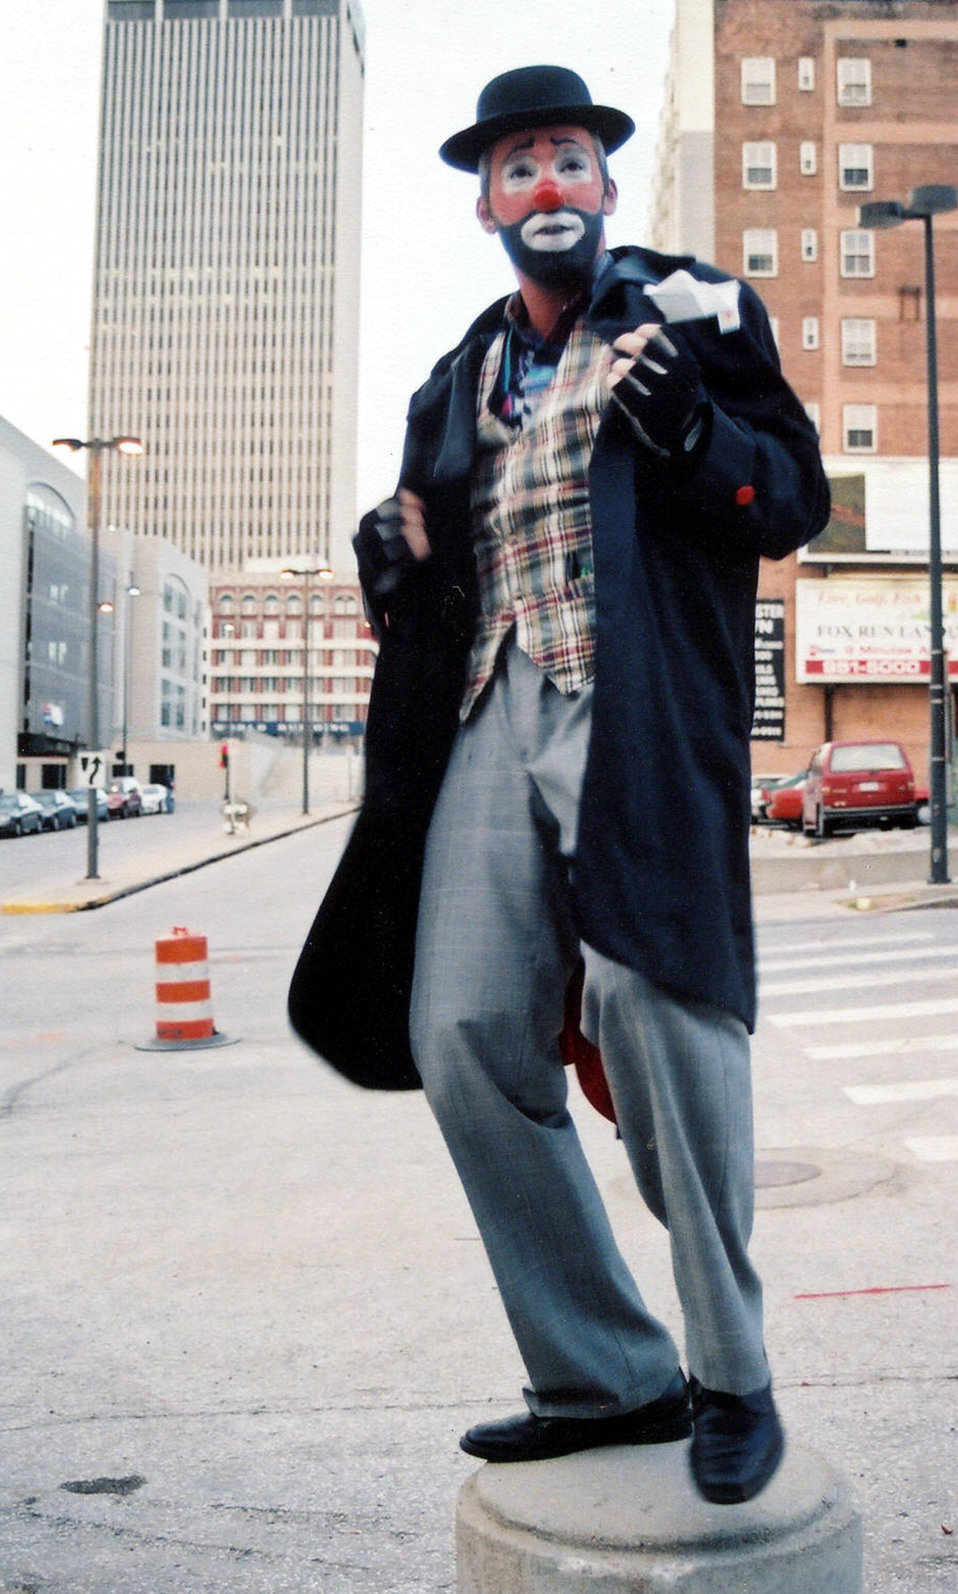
Clowning around

OMAHA, Neb. -- Senior Master Sgt. A.J. Johnson as Kleenax the clown visits downtown before joining his clown buddies for the annual Shrine Circus here. At work, he is a supervisor in the Joint Intelligence Center of U.S. Strategic Command. During his off time, he becomes Kleenax or Splinter.